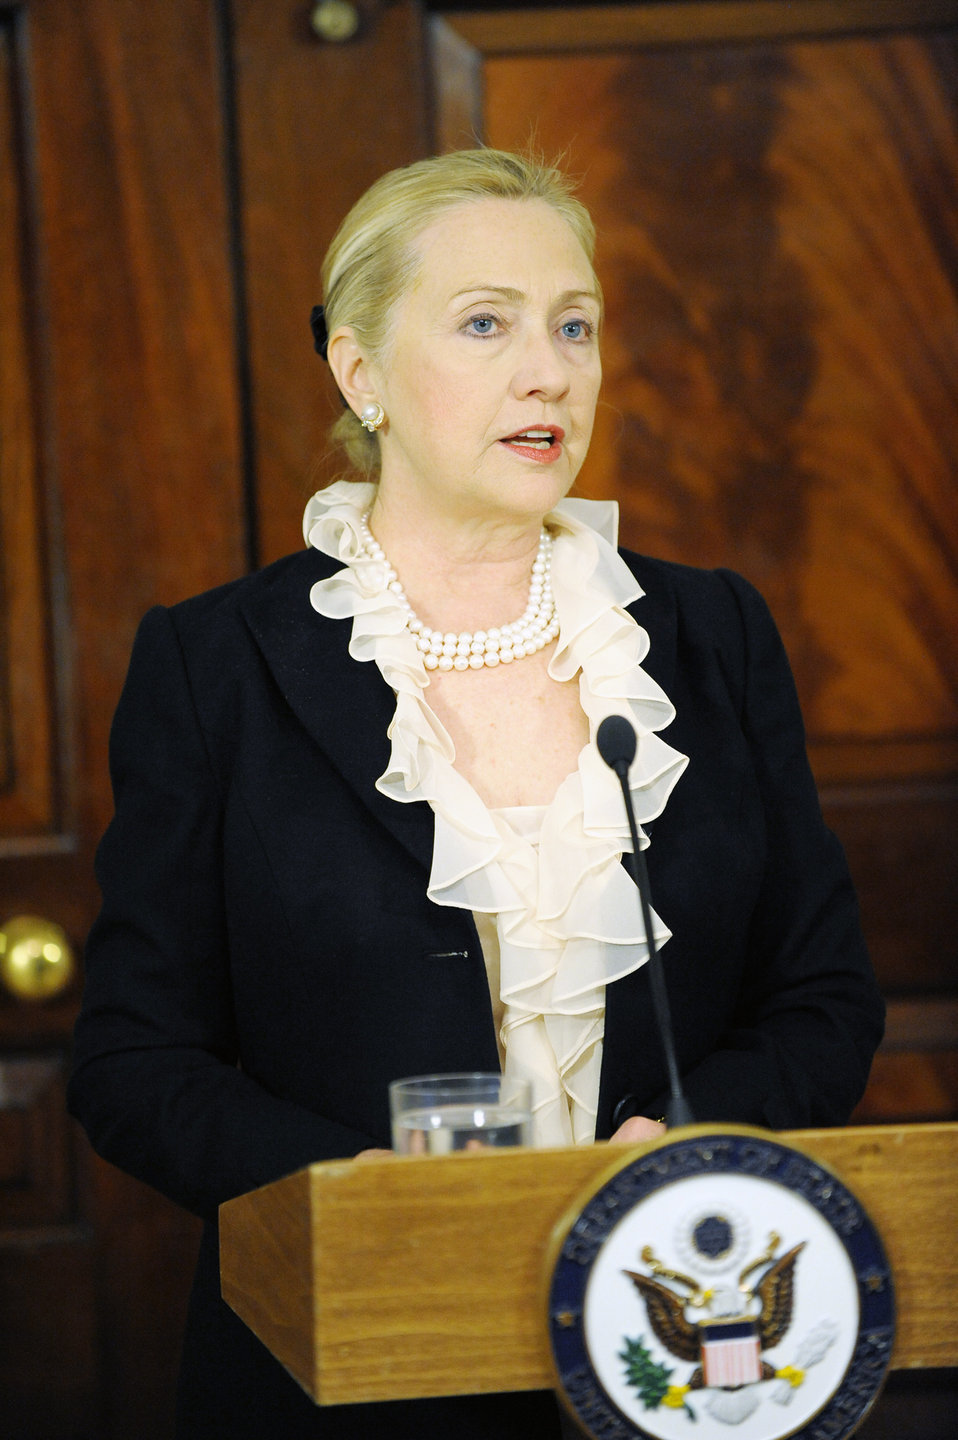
Secretary Clinton Delivers Remarks on Burma

U.S. Secretary of State Hillary Rodham Clinton delivers remarks on Burma at the U.S. Department of State in Washington, D.C., on January 13, 2012.